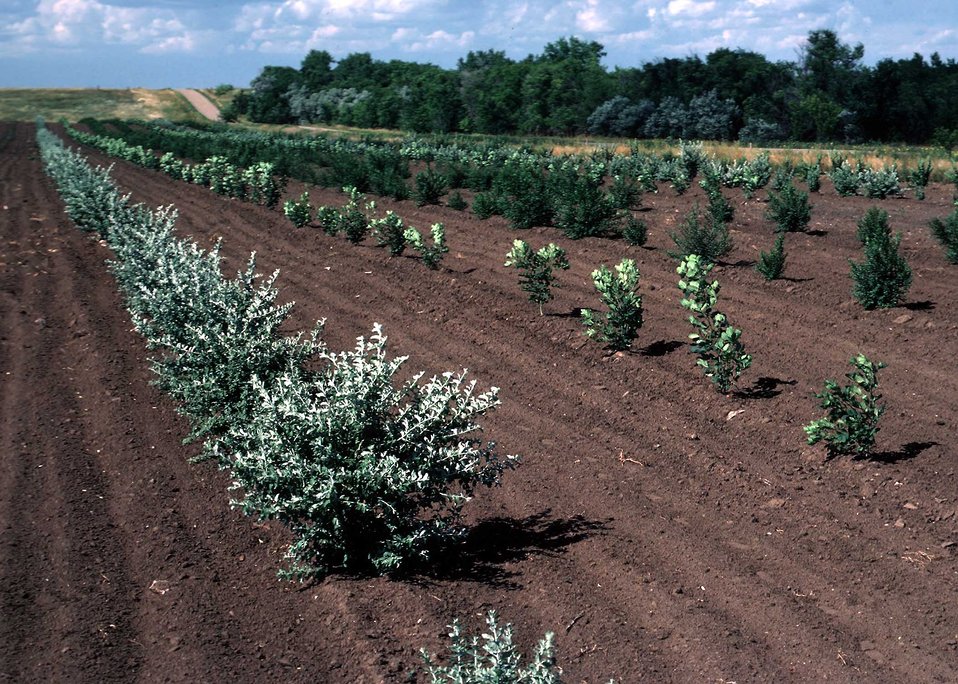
A newly established windbreak will provide protection from wind erosion and habitat for wildlife.